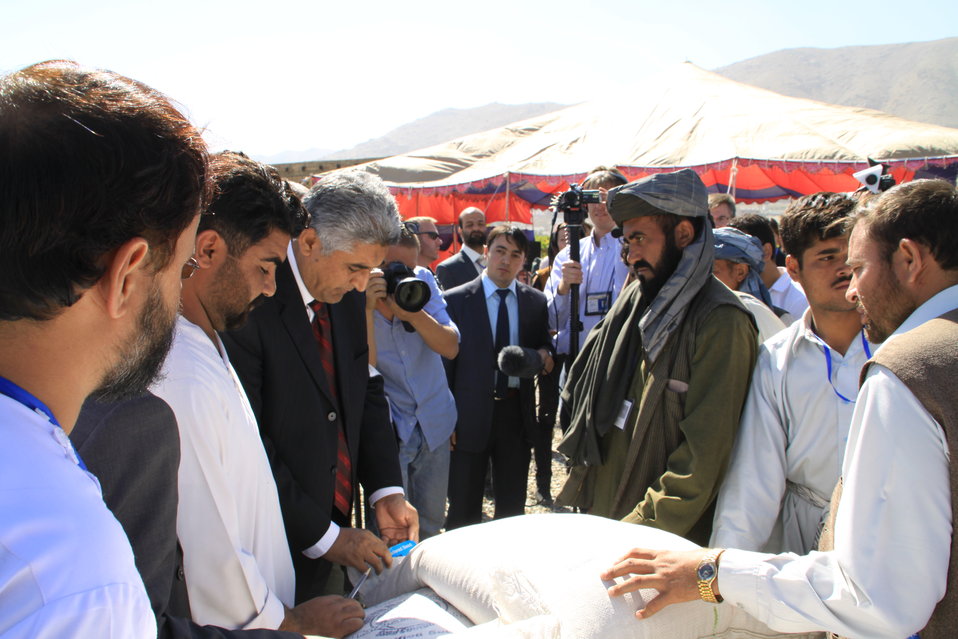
AVIPA Plus Wheat Seed Distribution 101005

US Ambassador Karl Eikenberry and USAID Acting Mission Director Kevin Brownawell joined the Minister of Agriculture, Irrigation and Livestock, H.E. Minister Mohammed Rahimi in signing a Memorandum of Understanding and distributing vouchers to area farmers for wheat and fertilizer.

US Ambassador Karl Eikenberry and USAID Acting Mission Director Kevin Brownawell joined the Minister of Agriculture, Irrigation and Livestock, H.E. Minister Mohammed Rahimi in signing a Memorandum of Understanding and distributing vouchers to area farmers for wheat and fertilizer.